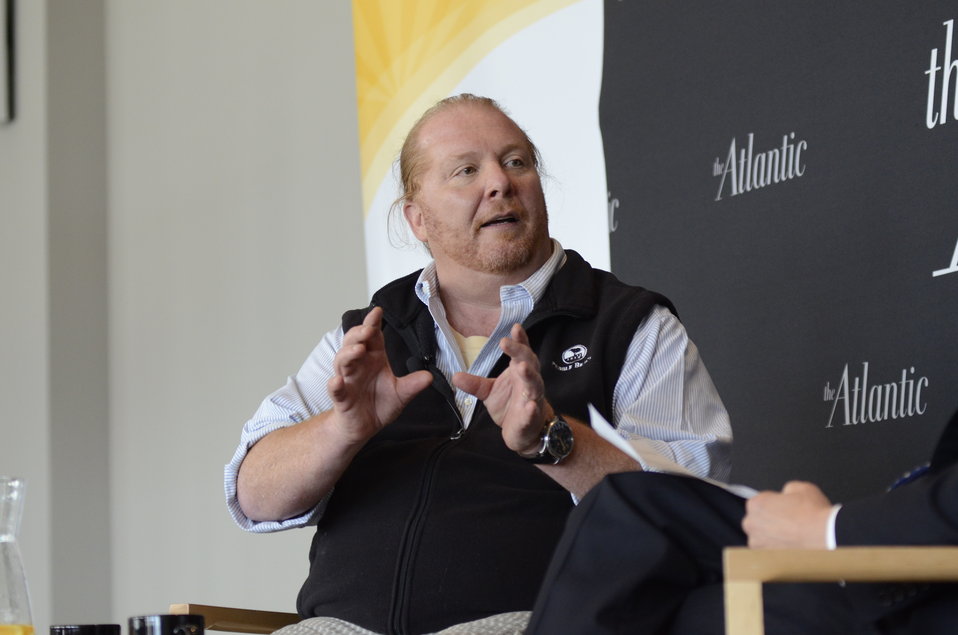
The Atlantic Senior Editor Corby Kummer interviews Chef, restaurateur, author, and television personality Mario Batali at the 3rd Annual Food Summit held at the W Hotel in Washington, D.C. on Thursday, May 24, 2012. The Food Summit event includes interviews, panel discussions and symposia with leading authorities on issues related to food, food security, and nutrition.